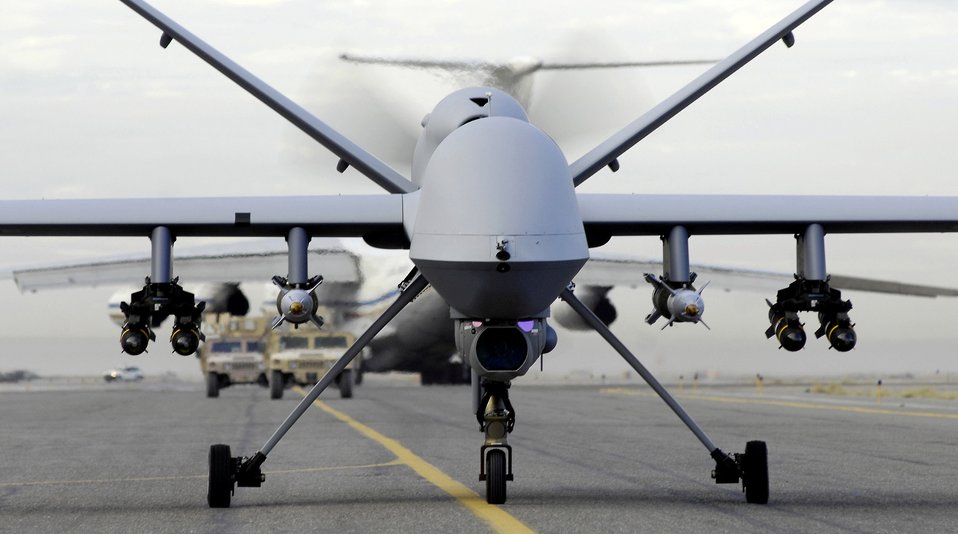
Dec. 10 airpower summary: Reaper destroys target

An Air Force MQ-9A Reaper taxis in preparation for a mission in support of Operation Enduring Freedom. The MQ-9A's primary mission is a hunter-killer against emerging targets to achieve joint force commander objectives.